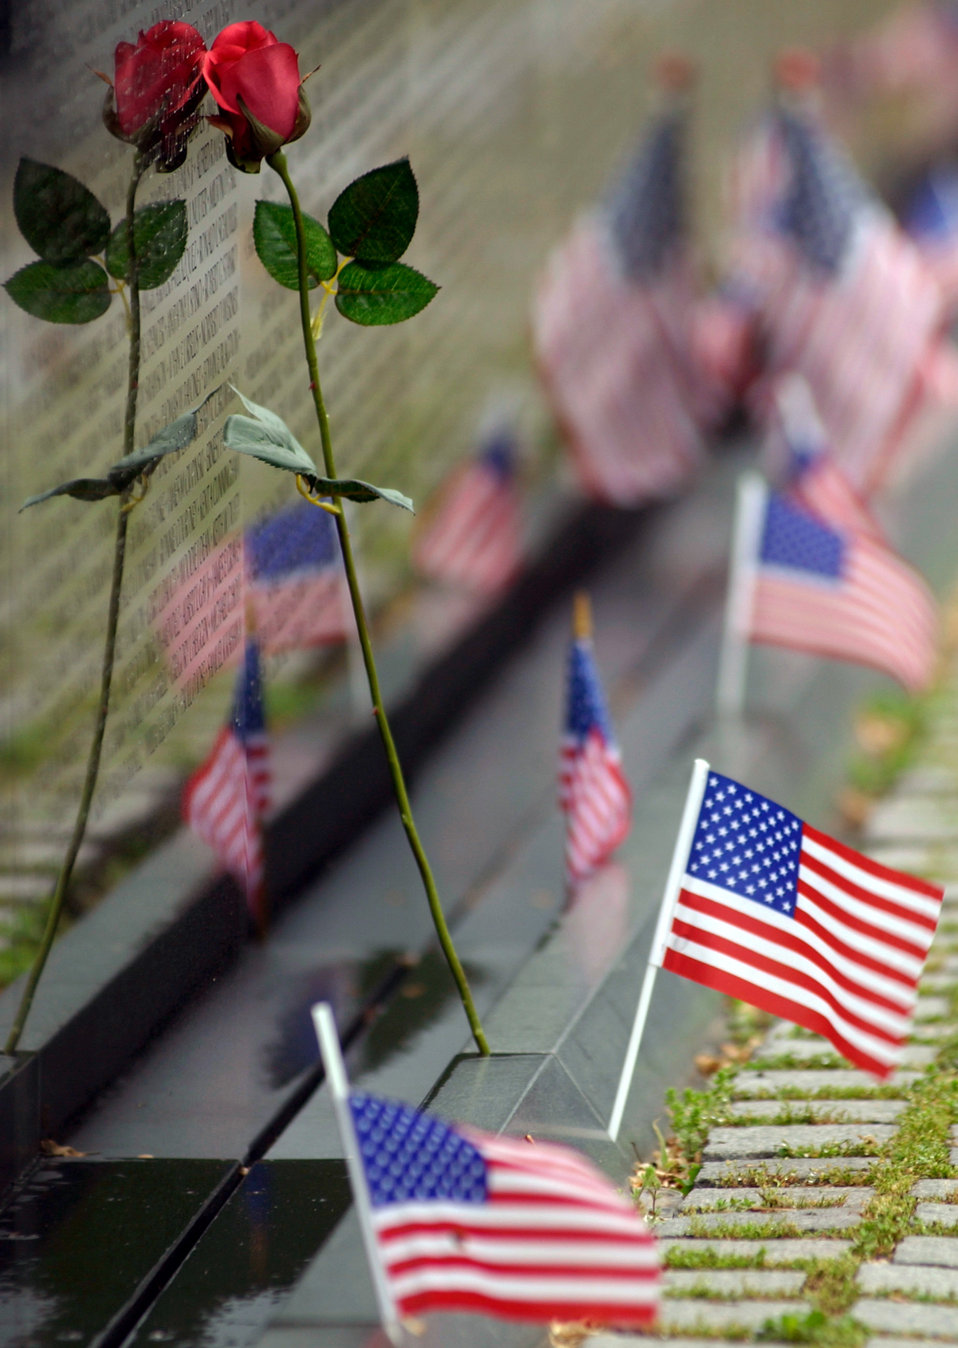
POWs, MIAs remembered

WASHINGTON (AFPN) -- Prisoners of war and those missing in action are remembered Sept. 19 on national POW/MIA Recognition Day. At the Vietnam War Memorial here, people leave behind patriotic and sentimental symbols of a nation's gratitude for veterans' sacrifices.